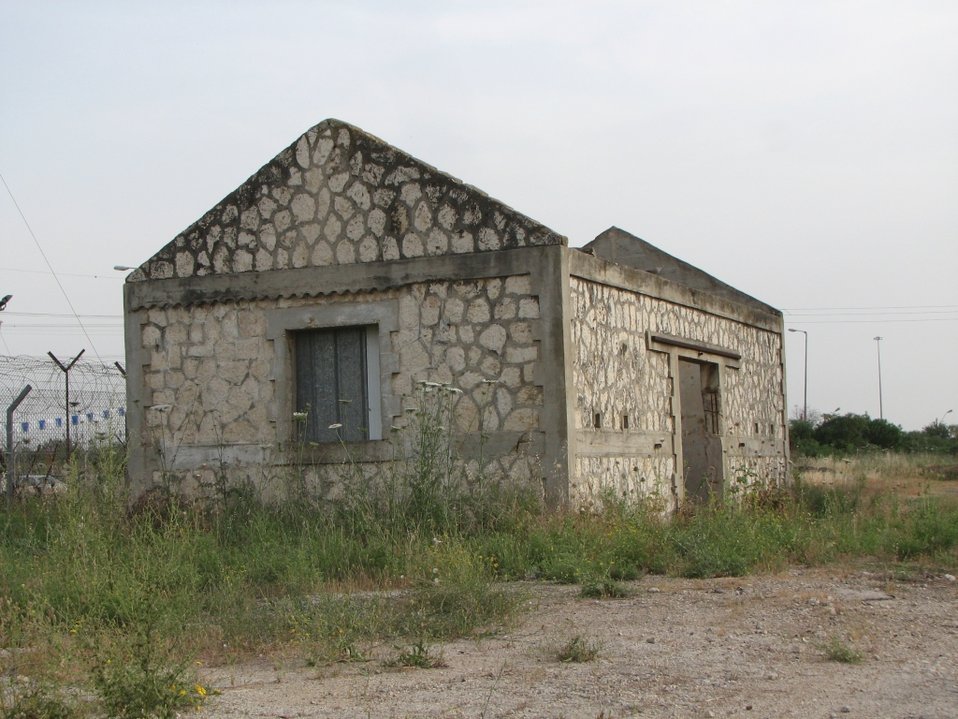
עברית: שרידי תחנת הרכבת אייל